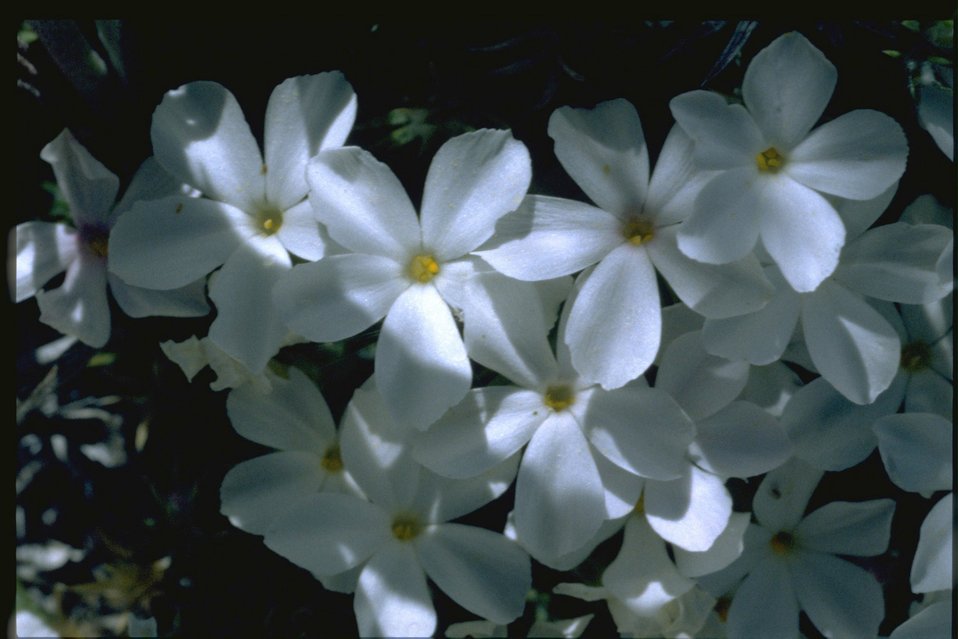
Close up shot of phlox.